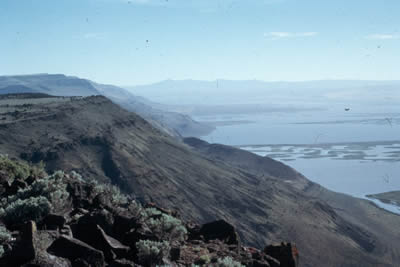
View of Hart Mt Hart overlooking wetlands - MT National Antelope Refuge

Visitors to the Refuge can experience spectacular views of the beautiful Warner Valley Wetlands while ascending the west side of Hart Mountain.